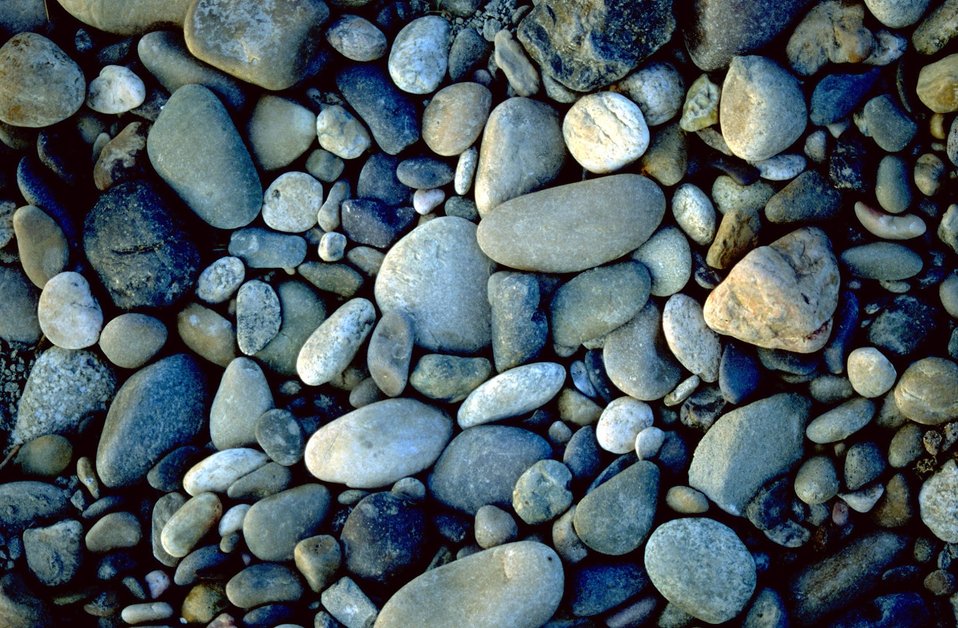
Yellowstone River rock